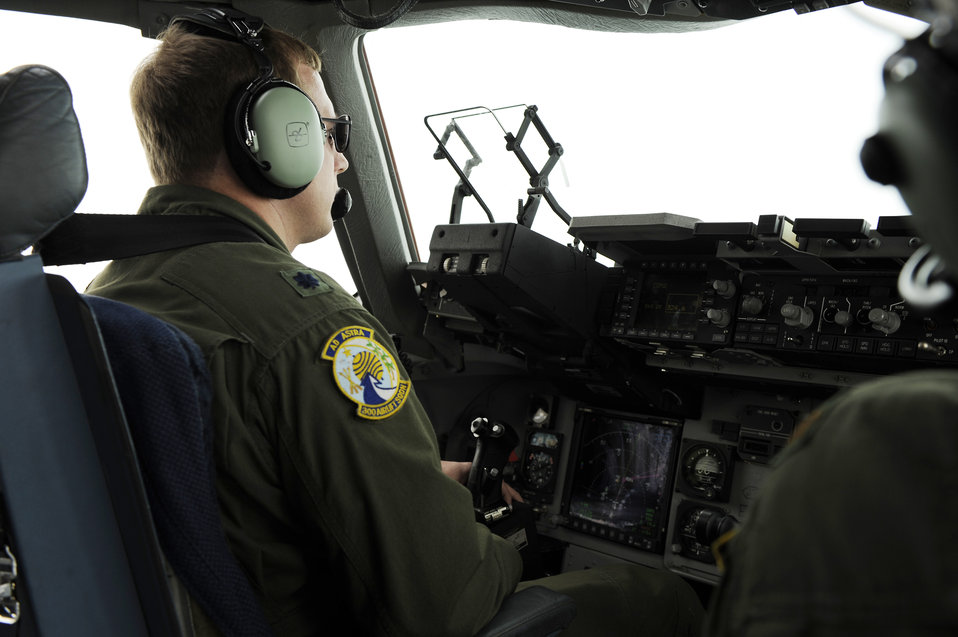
Charleston aircrew refuel near MacDill

Lt. Col. Dave Snyder from the 300th Airlift Squadron at Charleston Air Force Base, S.C., conducts a training mission March 12, 2010, aboard a C-17 Globemaster III near MacDill AFB, Fla.